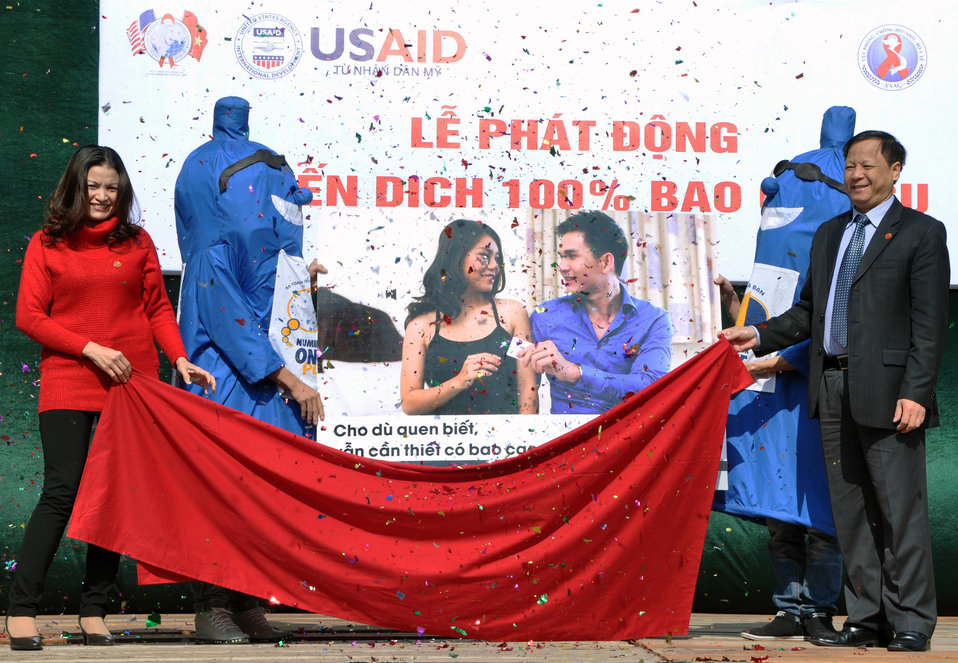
100% Condom Use Campaign Launch, Dec. 2, 2011